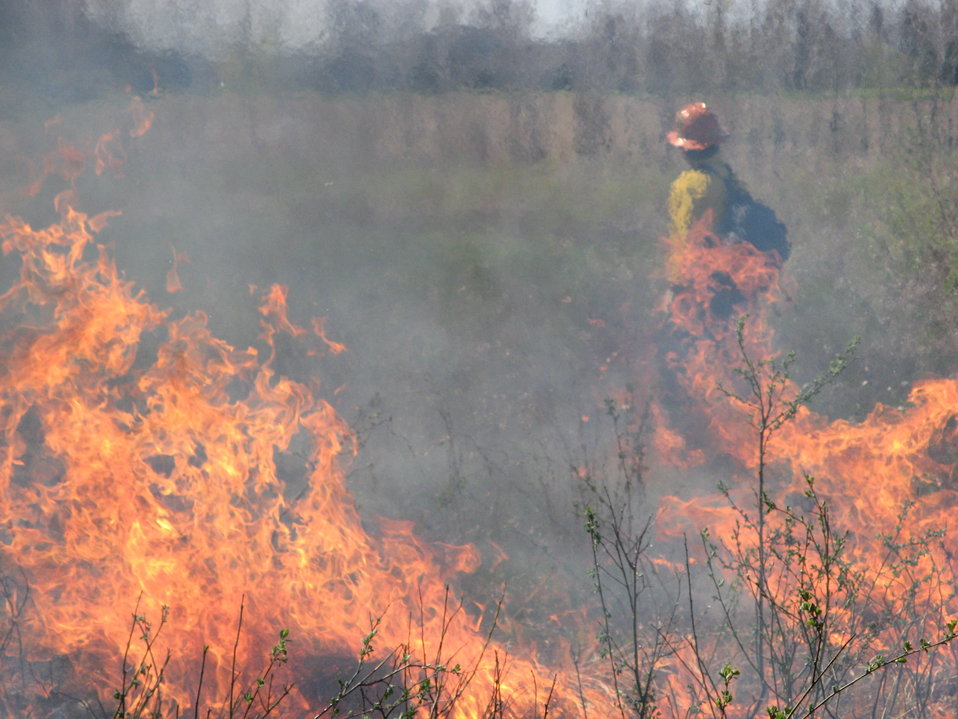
Heat waves during an Iroquois National Wildlife Refuge controlled burn

Alabama, New York. Heat waves from a controlled burn at Iroquois National Wildlife Refuge blur an image of a wildland firefighter. Controlled burns help maintain habitat for many wildlife species.